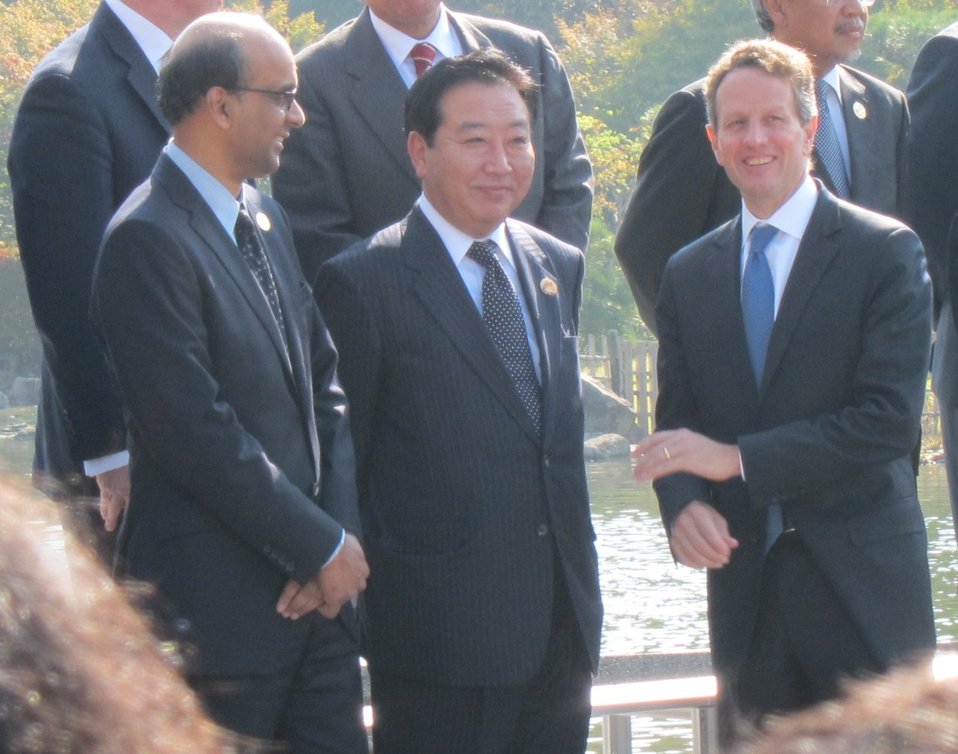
Secretary Geithner's trip to Japan

On Saturday, November 6, 2010, Secretary Geithner participated in a bilateral meeting with Japanese Finance Minister Noda in Kyoto, Japan.